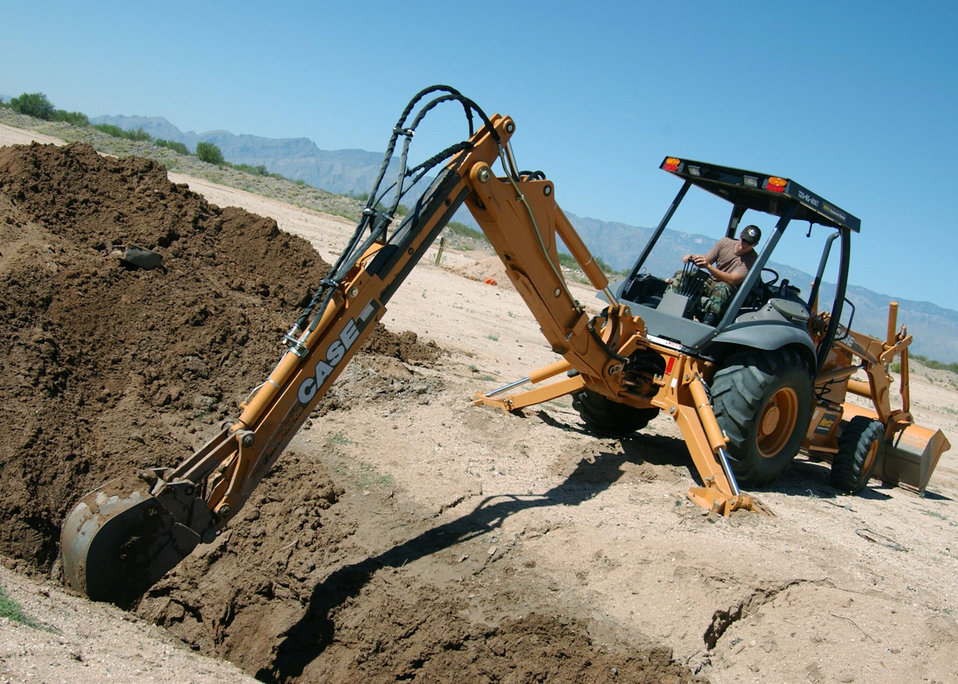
It's da bomb!

DAVIS-MONTHAN AIR FORCE BASE, Ariz. -- Staff Sgt. Robert Shay digs a hole here so explosive ordnance disposal workers can properly dispose of a World War II bomb that was found at a construction site here Sept. 10. Sergeant Shay is assigned to the 355th Civil Engineer Squadron.